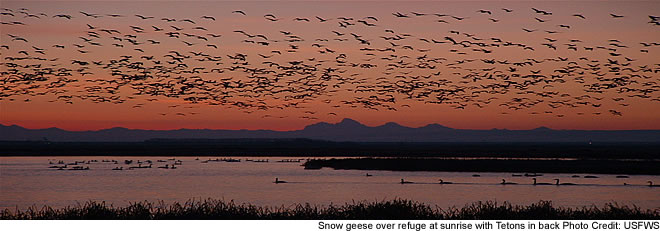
Snow Geese in Camas National Wildlife Refuge

Snow geese fly over the Camas NW Refuge at sunrise with the Teton Mountains in the background.